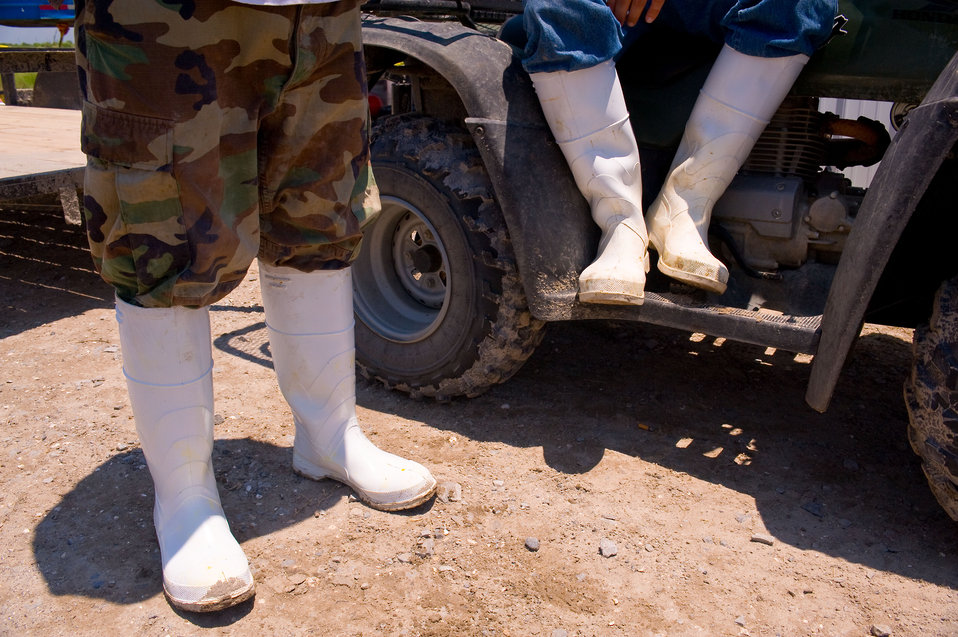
June 1, These work boots are easily decontaminated after beach cleanup

Lafourche, La.